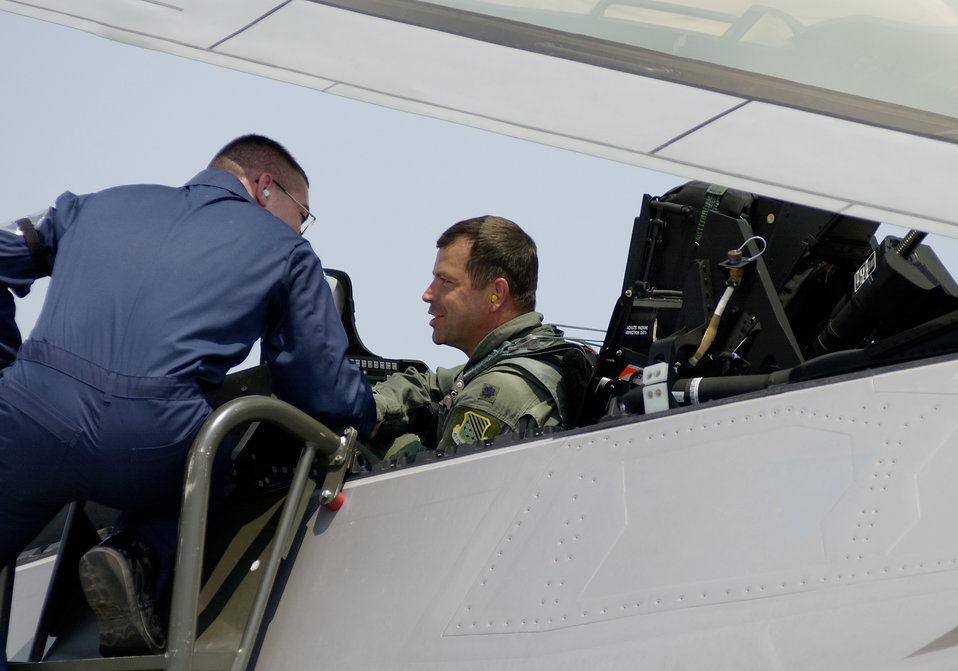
Two more Raptors arrive at Langley

LANGLEY AIR FORCE BASE, Va. -- Airman 1st Class Richard Alexander greets Lt. Col. Wade Tolliver after he delivered the second permanent F/A-22 Raptor here June 8. The third Raptor was also delivered June 8. Colonel Tolliver is the 27th Fighter Squadron director of operations, and Airman Alexander is an F/A-22 assistant crew chief.